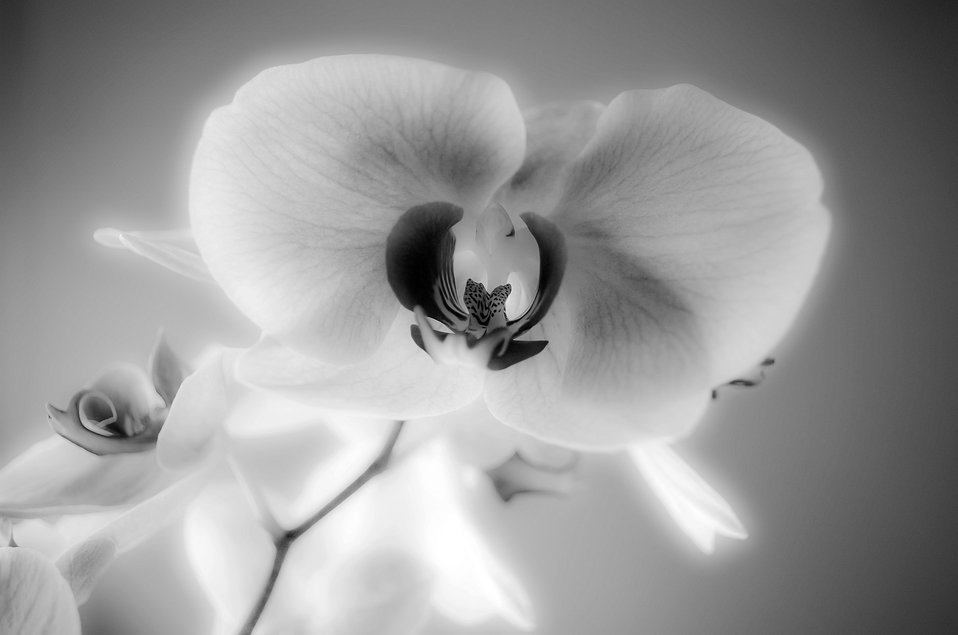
Orchid

White orchid.